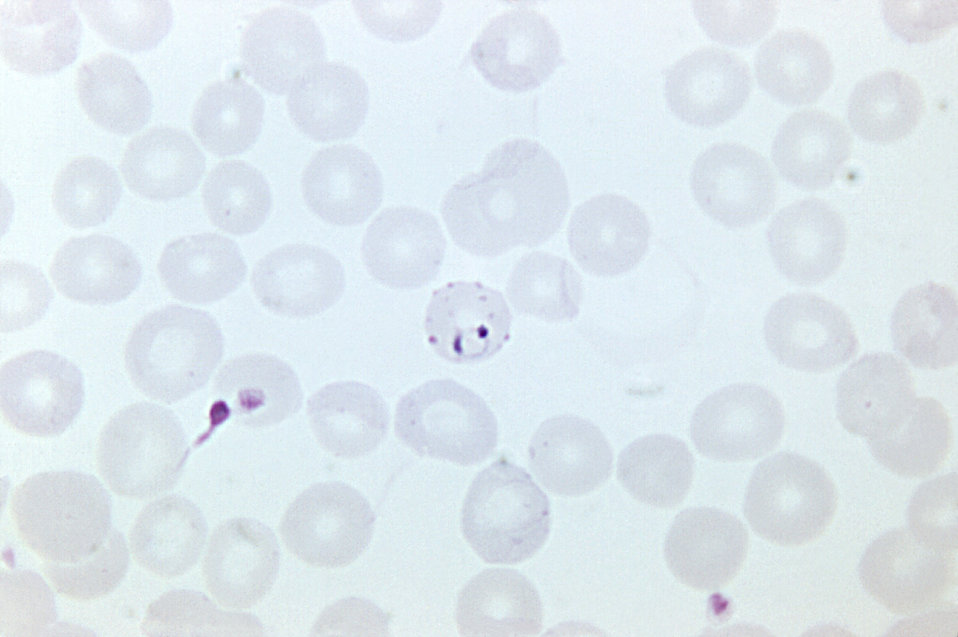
This thin film micrograph revealed a P. falciparum ring, inside an RBC along with Maurer's dots; Giemsa stain, Mg. 1125X.